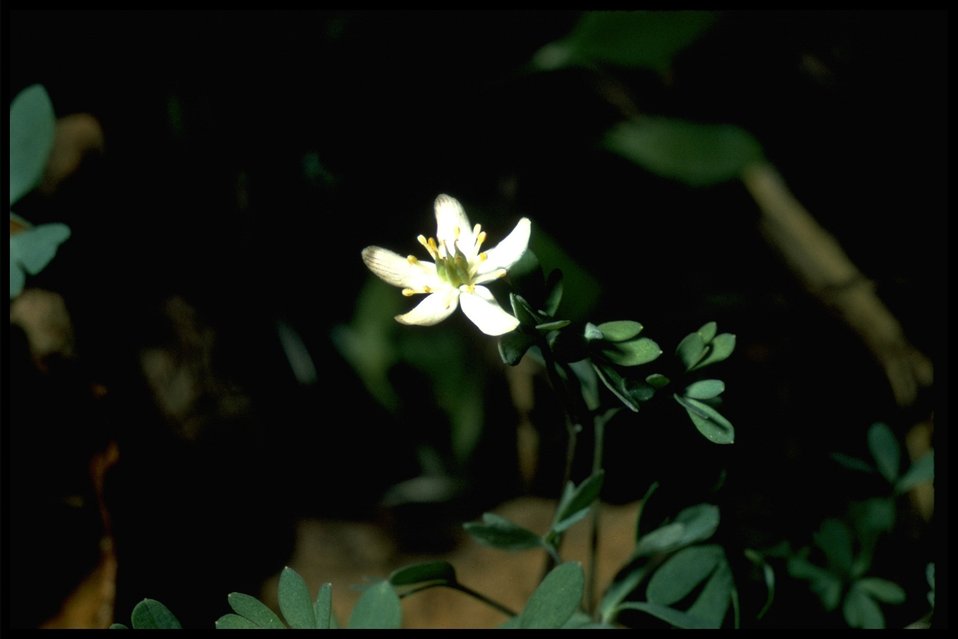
Isopyrum stipitatum, or commonly known as Dwarf Isopyrum.